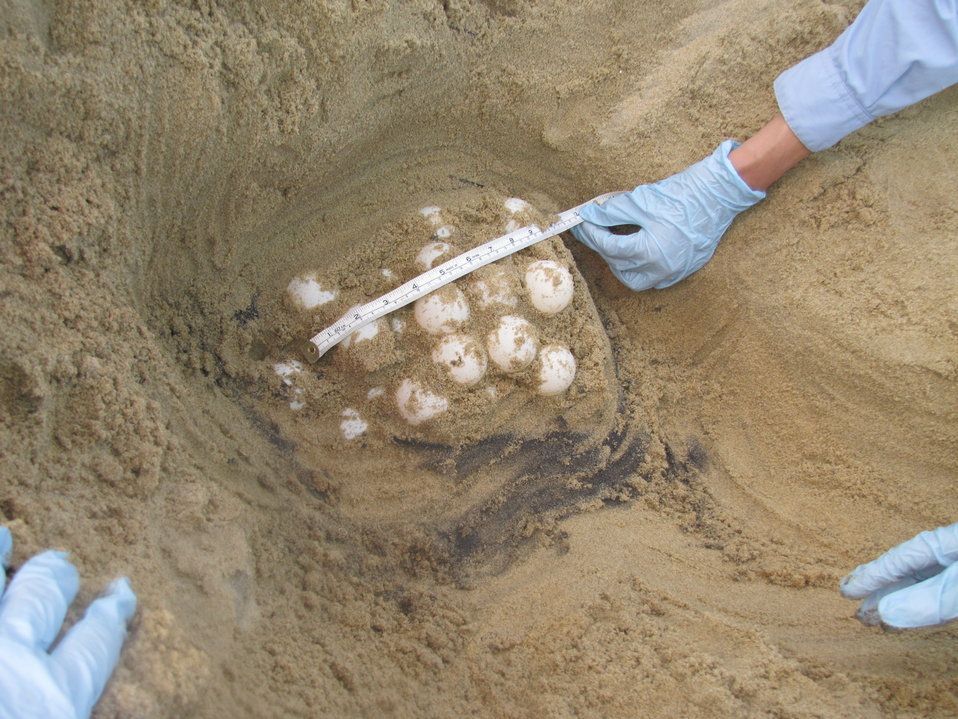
Nest 2 Measurements

Sea turtle eggs being relocated at Virginia Beach, VA.

Credit: USFWS
Crawl 2, Nest 2